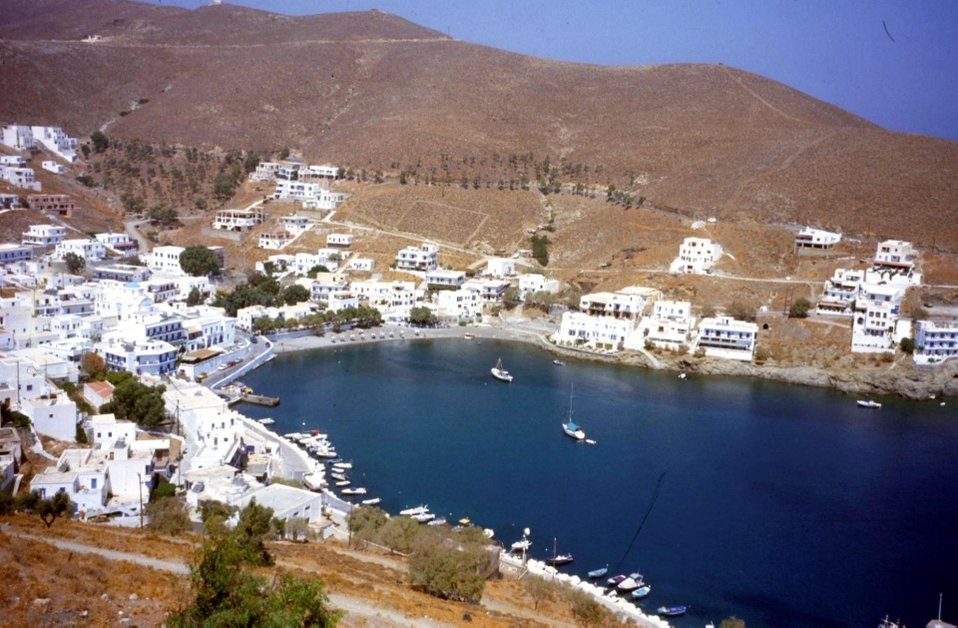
Deutsch: Scala auf Astipalaia